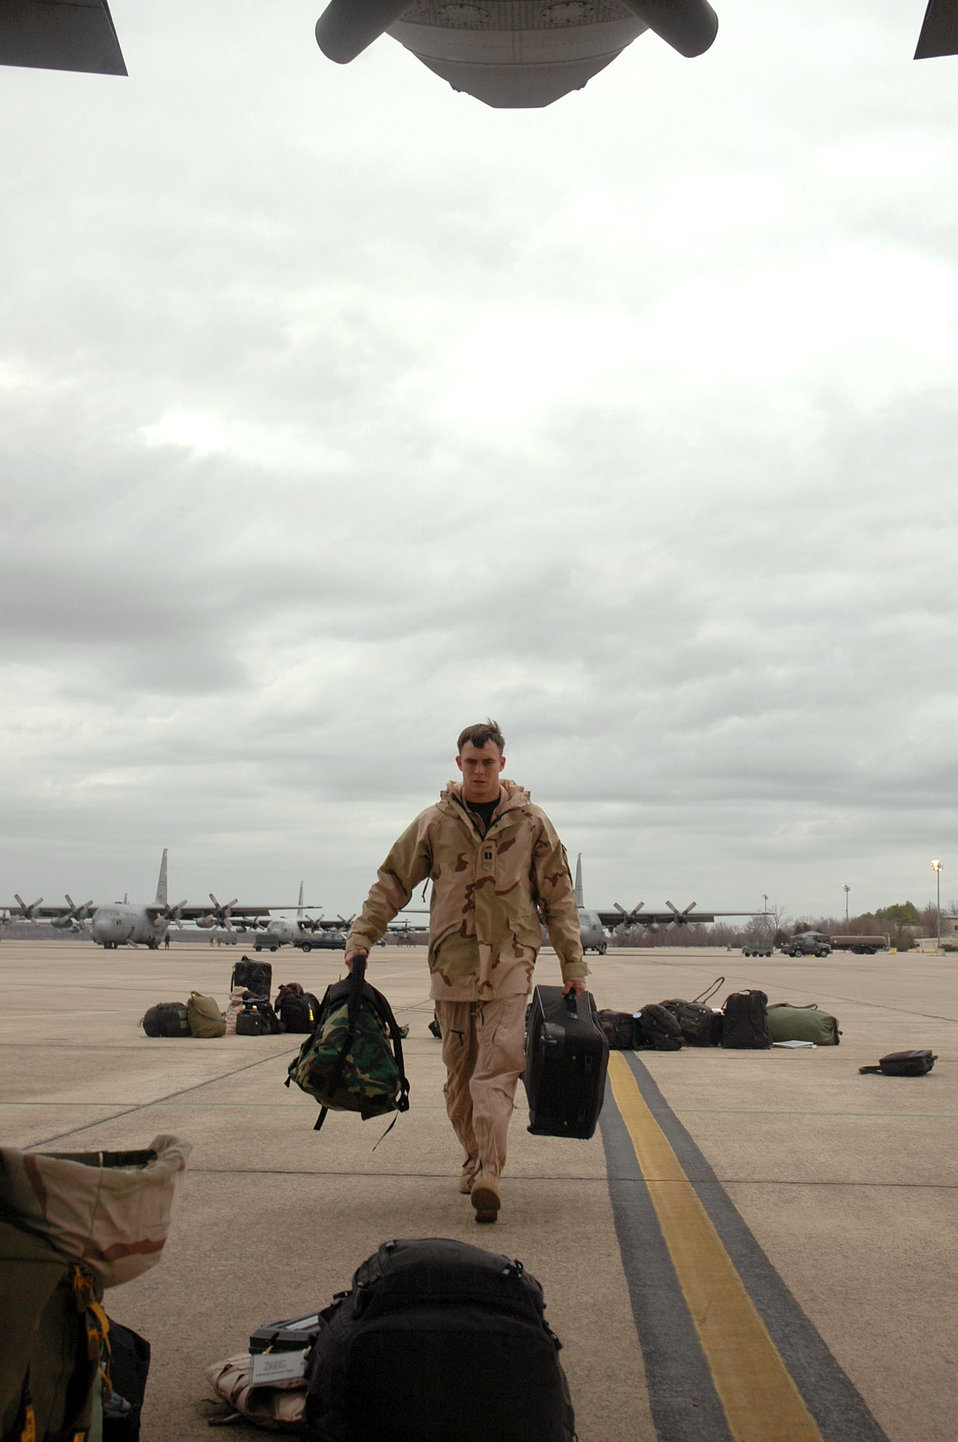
Little Rock deployment

LITTLE ROCK AIR FORCE BASE, Ark. (AFPN) -- Capt. Mark Yarian carries his gear to the back of a C-130 Hercules before departing for Southwest Asia. Two C-130s and 24 Airmen from the 463rd Airlift Group deployed Jan. 20 for 120 days. Captain Yarian is a pilot with the 61st Airlift Squadron.